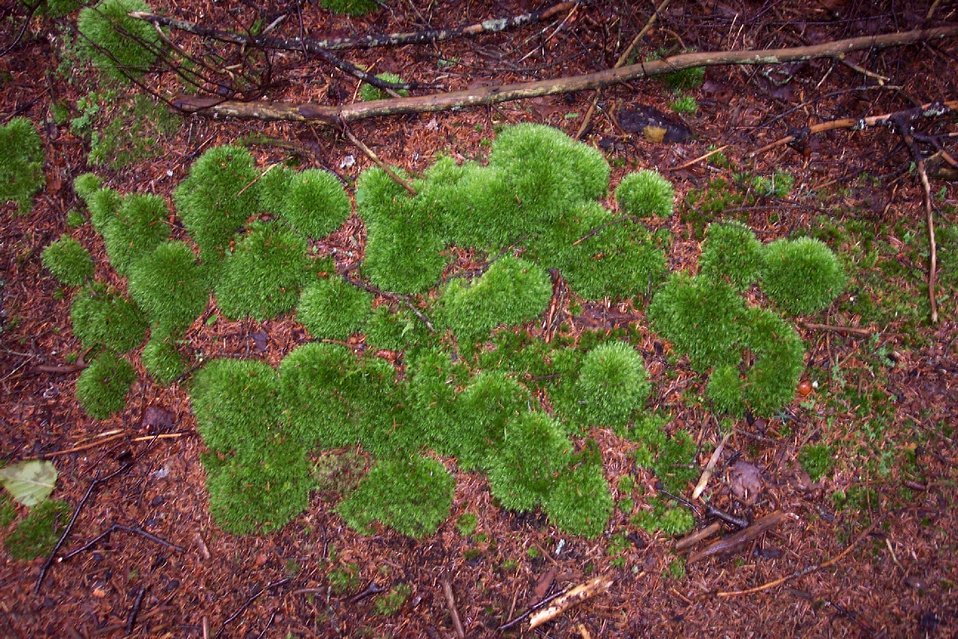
Round hummocky patches of moss about 3 to 4 inches in diameter cover the forest floor.